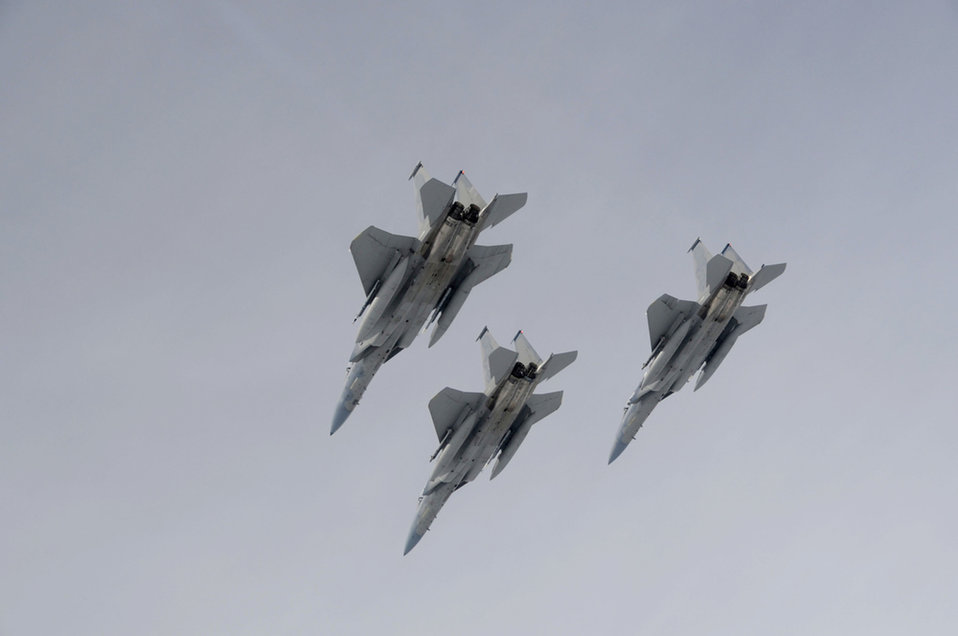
Cope Tiger 2011

F-15 Eagles assigned to the 44th Expeditionary Fighter Squadron at Kadena Air Base, Japan, fly over Thailand March 23, 2011, prior to starting an exercise scenario during Cope Tiger 2011, which runs from March 14 through 25. Participants of Cope Tiger include the U.S. Air Force, the U.S. Marine Corps, the Royal Thai Air Force, Royal Thai Army and the Republic of Singapore Air Force.